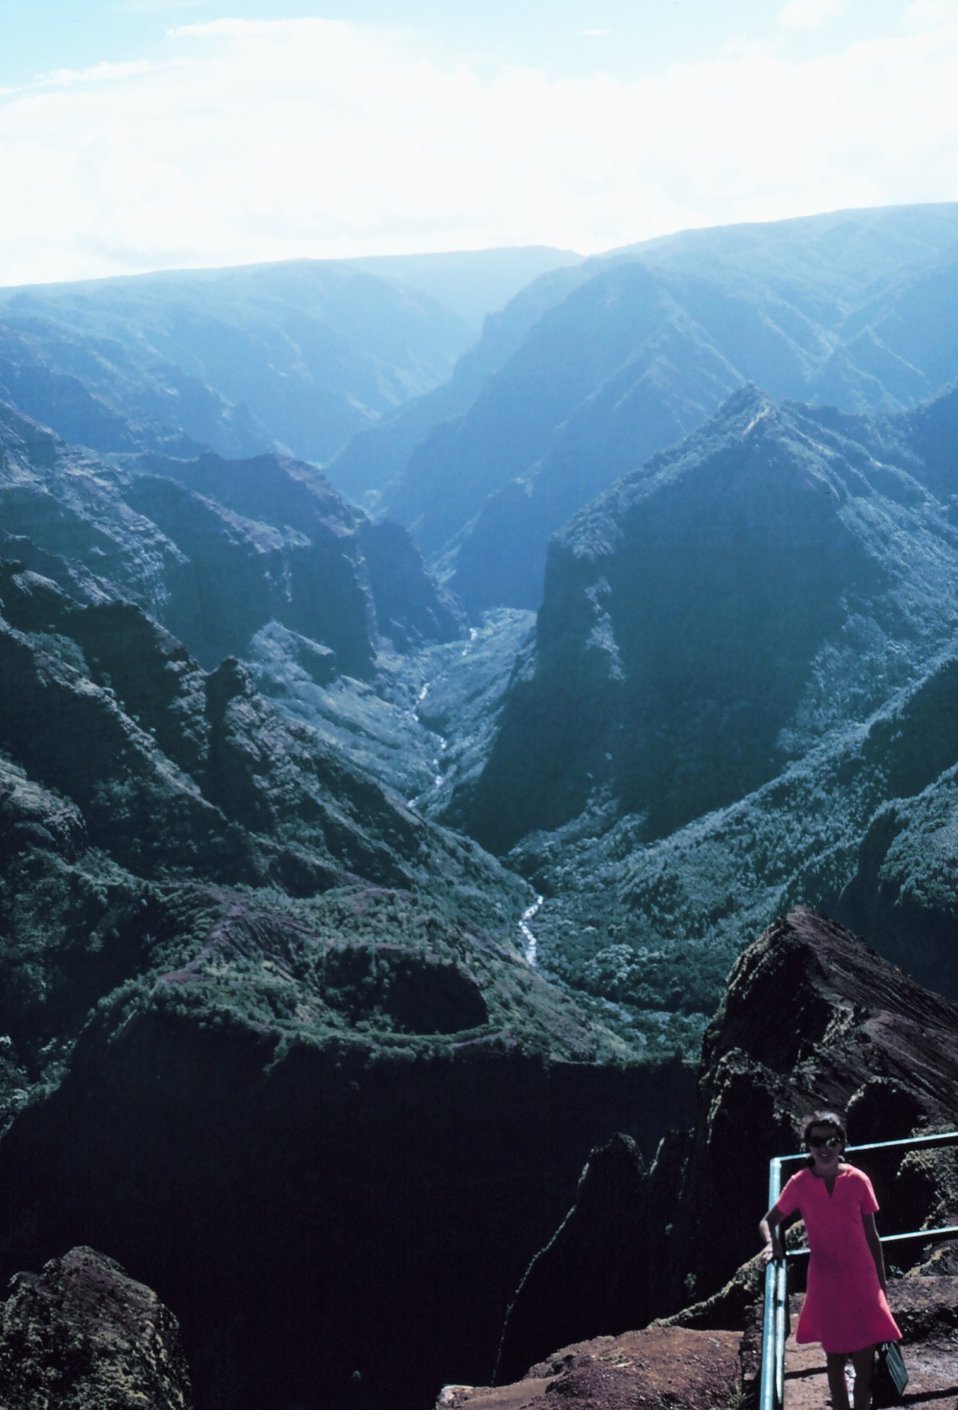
Waimea Canyon - the Grand Canyon of the Pacific